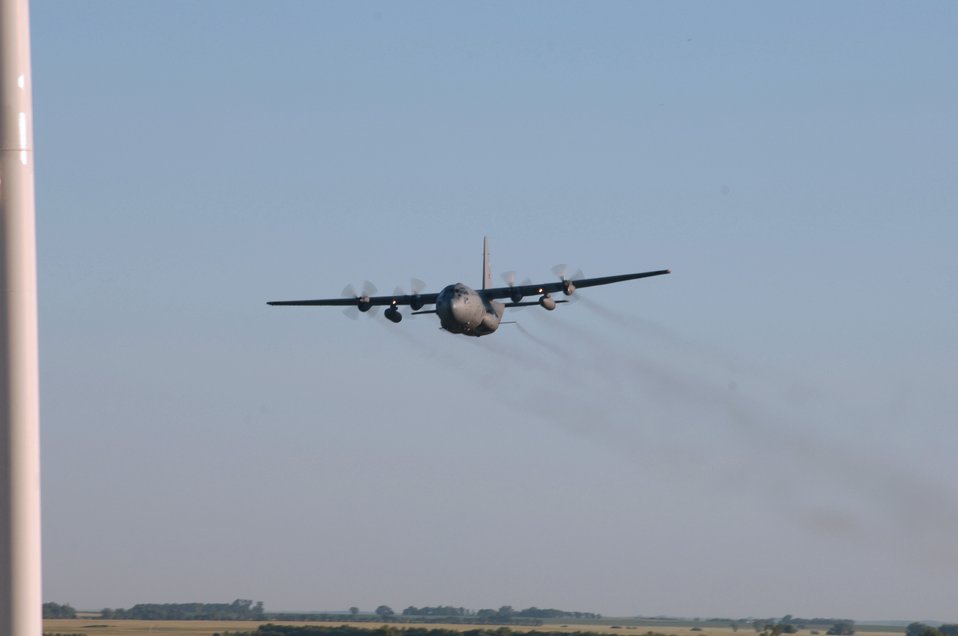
Mosquito assault

MINOT AIR FORCE BASE, N.D. -- A C-130 Hercules flies over the base July 19 while spraying for mosquitos. The aerial spraying helps control the mosquito population that has increased because of unseasonably wet weather. The team is with the 757th Airlift Squadron from Youngstown Air Reserve Base, Ohio.